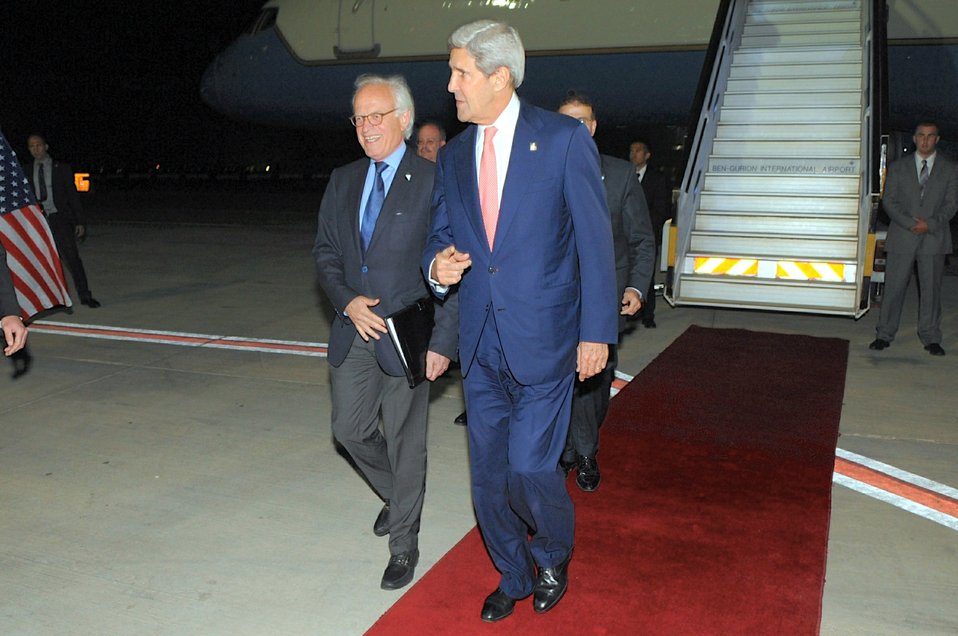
Secretary Kerry Walks With Special Envoy Indyk After Arriving in Tel Aviv

U.S. Secretary of State John Kerry walks with Martin Indyk, the U.S. Special Envoy for Israeli and Palestinian Negotiations, after arriving in Tel Aviv, Israel, on November 5, 2013, for meetings with Israeli and Palestinian Authority leaders.